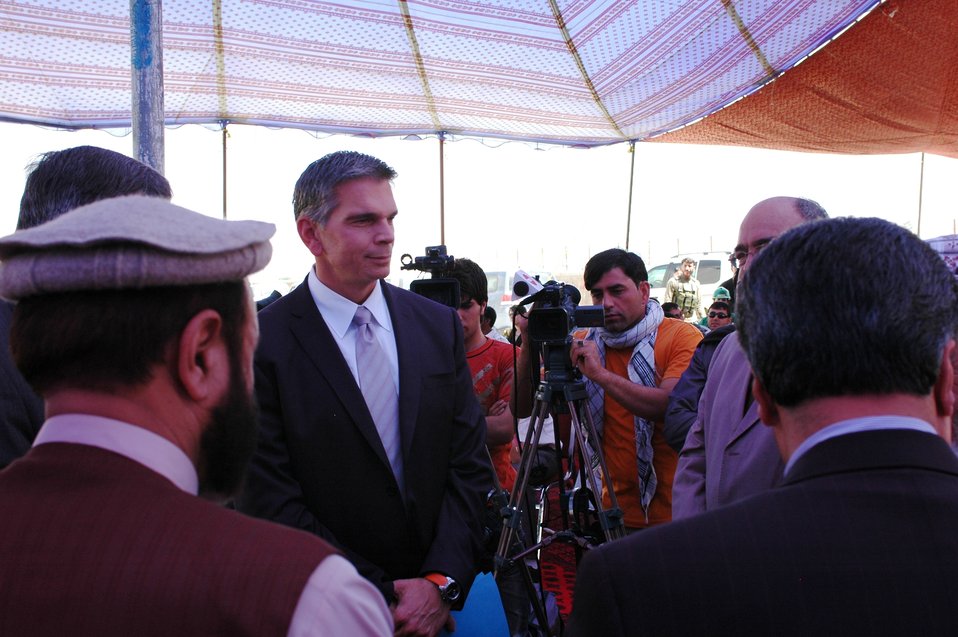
105 MW Tarakhil Power Plant Handover